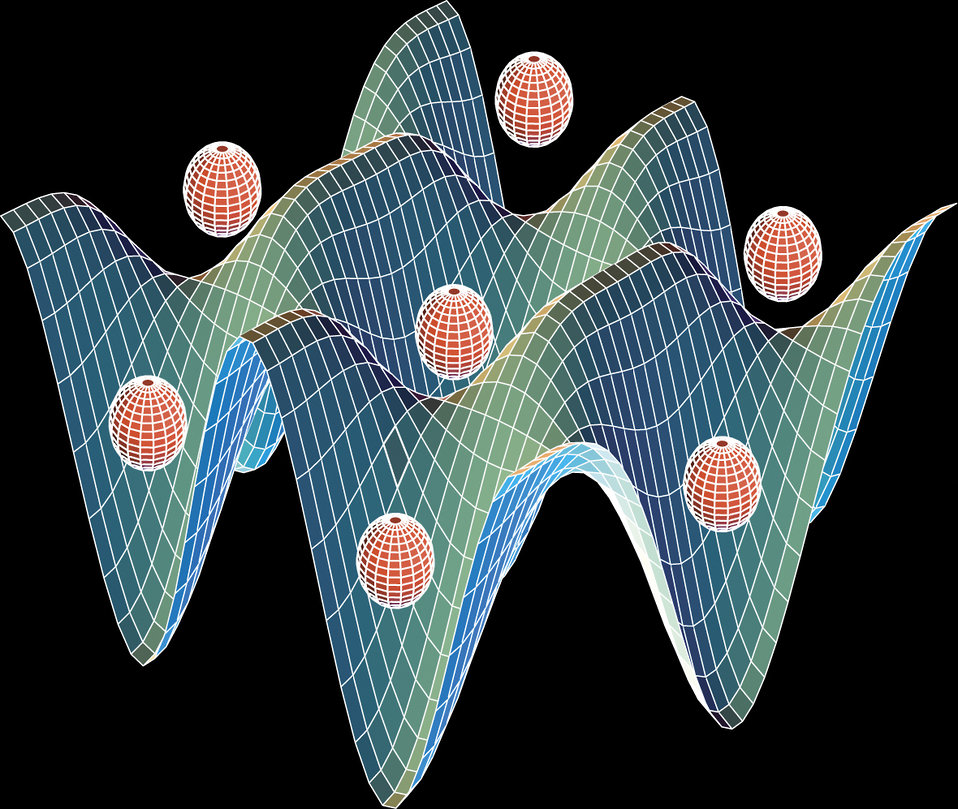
Optical Lattice

This illustration shows how neutral atom qubits can be trapped in an optical lattice made of intersecting laser beams.